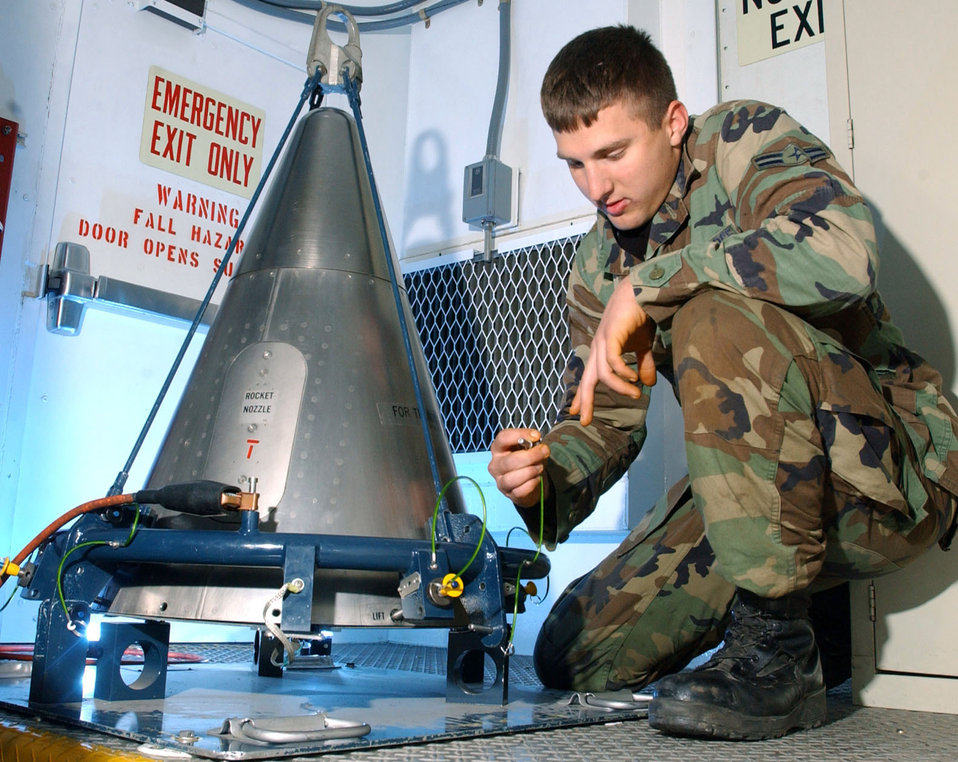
A Minute's worth of training

MINOT AIR FORCE BASE, N.D. -- Airman 1st Class Kristopher Massa inspects a pin on a Minuteman III missile component at a missile maintenance trainer here. He is a missile maintenance technician assigned to the 91st Missile Maintenance Squadron.